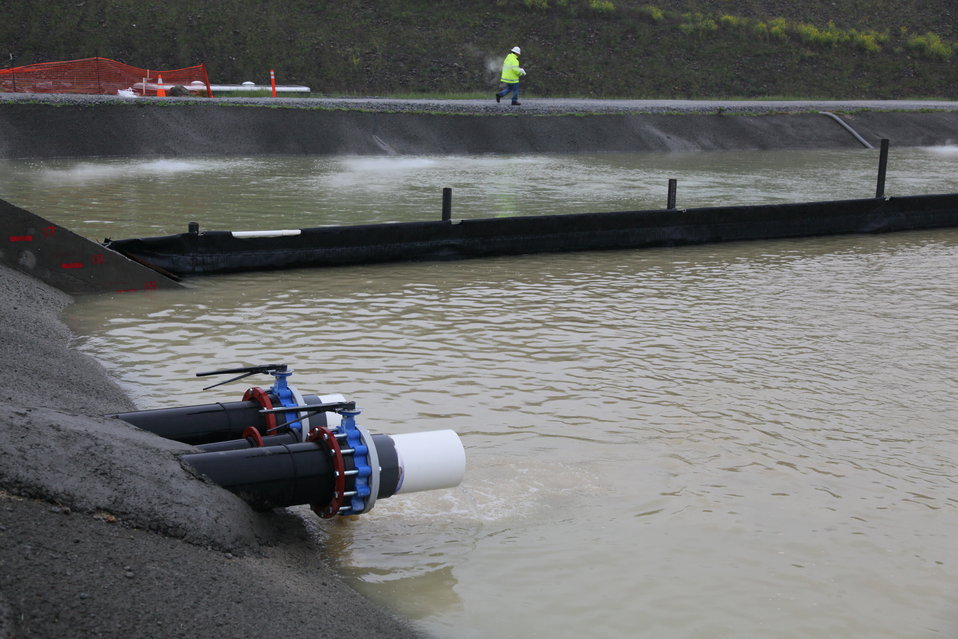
Runoff water treatment at the Folsom Dam auxiliary spillway

A contractor for the U.S. Army Corps of Engineers Sacramento District adds dry ice to reduce pH levels in ponds of runoff water at the excavation site for the Folsom Dam auxiliary spillway Folsom, Calif., March 15, 2012. Runoff that enters the excavation site is treated, monitored and filtered before being pumped into Folsom Lake. The spillway, scheduled to be ready for use in 2017, will allow Folsom Dam to release water sooner and more safely. The project is part of the Folsom Dam Joint Federal Project, a joint effort of the Sacramento District, the U.S. Bureau of Reclamation, the Central Valley Flood Protection Board and the Sacramento Area Flood Control Agency to improve the safety of the dam and reduce flood risk for the greater Sacramento area.